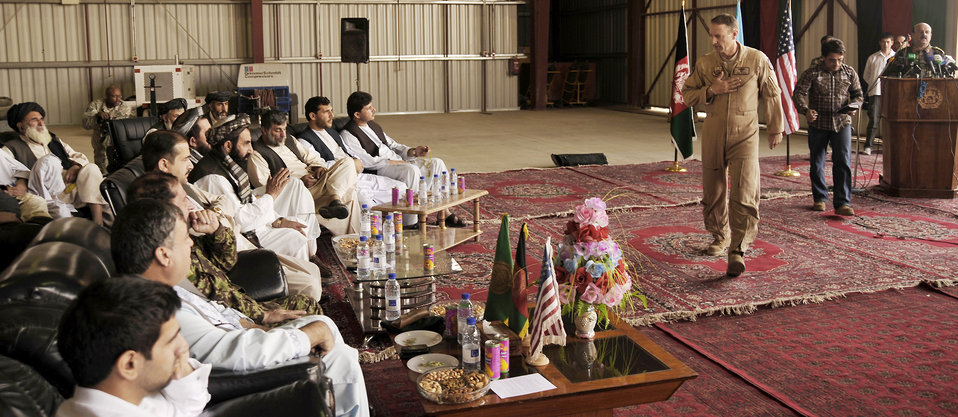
Wing Stand-Up for Afghans

Brig. Gen. Mike Boera helps addresses the audience at an Afghan National Army Air Corp wing activation Oct. 5, 2009, at Kandahar Airfield, Afghanistan. The wing is the ANAAC's second and supports Mi-17 helicopter operations and training. General Boera is the Commanding General of Combined Air Power Transition Force, Combined Security Transition Command-Afghanistan.